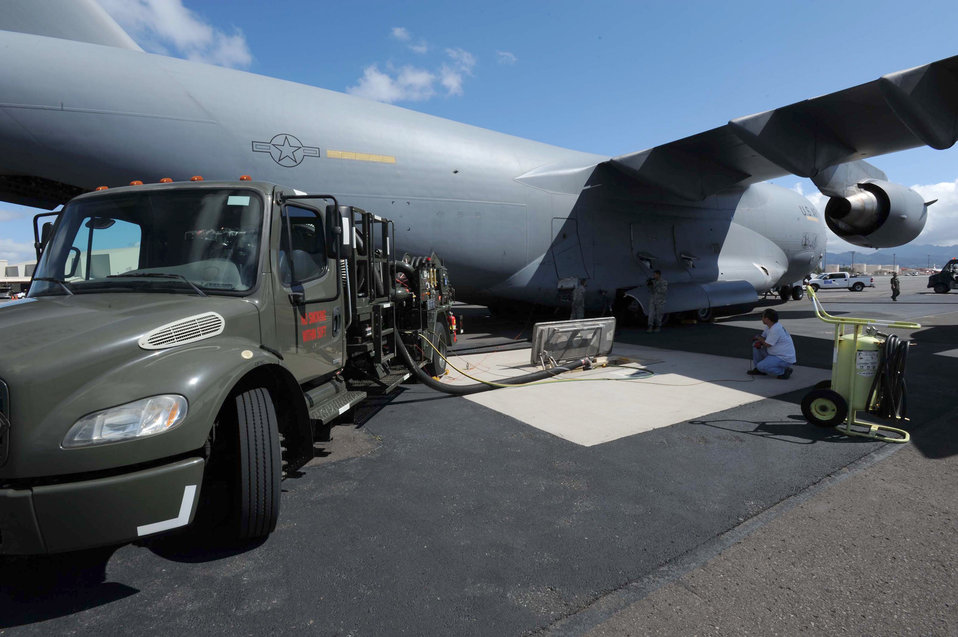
humanitarian mission to Japan

U.S. Air Force maintainers and fuel technicians fuel a U.S. Air Force C-17 Globemaster III cargo aircraft at Joint Base Pearl Harbor-Hickam, Hawaii, in preparation for its departure on a humanitarian mission to Japan on March 12, 2011. The C-17 will by flown various Air Force bases in Japan during its mission to provide support for Japan relief efforts in the wake of tsunami and earthquake damage there.